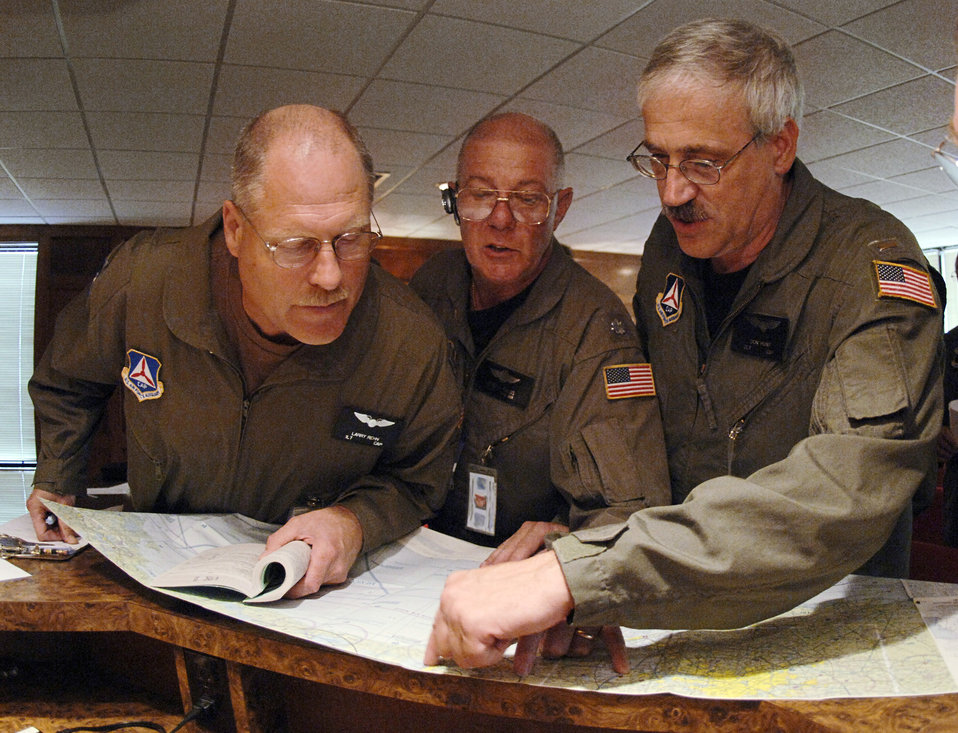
Civil Air Patrol responds

HOUSTON -- Larry Rehn (left) studies a suggested flight plan from Lt. Col. Brian Childes (center) while 2nd Lt. Don Hunt (right), looks where his mission will take him. Civil Air Patrol pilots from across the nation came to Houston to support the assessment of Hurricane Rita's impact. This was the second day of flight operations after the Texas CAP was requested to begin operations in Houston. By the end of Sept. 26, they completed 50 sorties, providing photo reconnaissance of potential damage, oil spills, traffic congestion, flood assessment and live multispectral imagery for state and federal agencies. The CAP is a volunteer organization that augments and enhances a variety of operations.